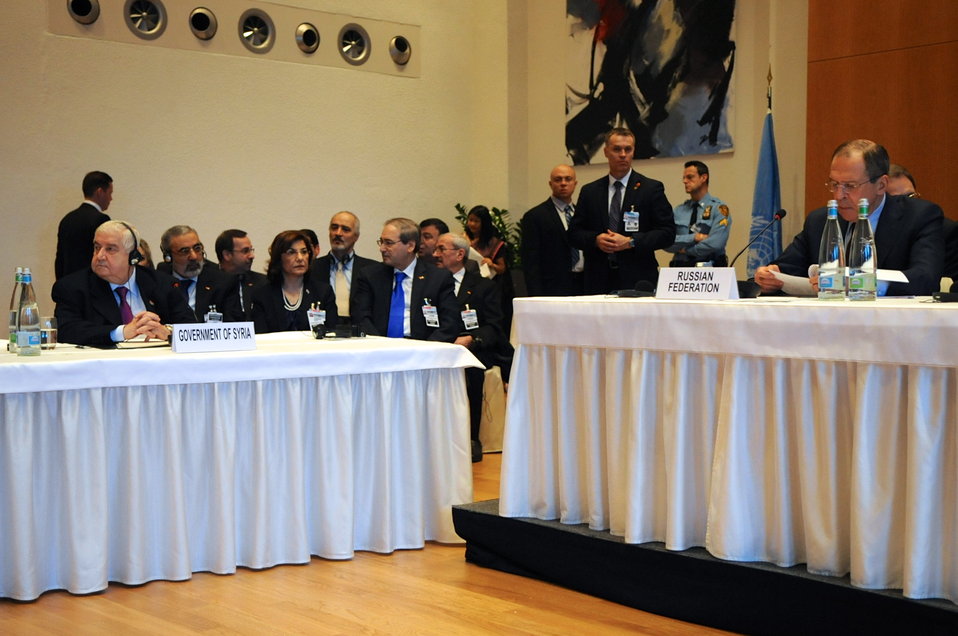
Russian Foreign Minister Lavrov Sits Beside Syrian Foreign Minister Moualem at Geneva II Conference

Russian Foreign Minister Sergey Lavrov sits beside Syrian Foreign Minister Walid Moualem at the start of the Geneva II conference in Montreux, Switzerland, on January 22, 2014.